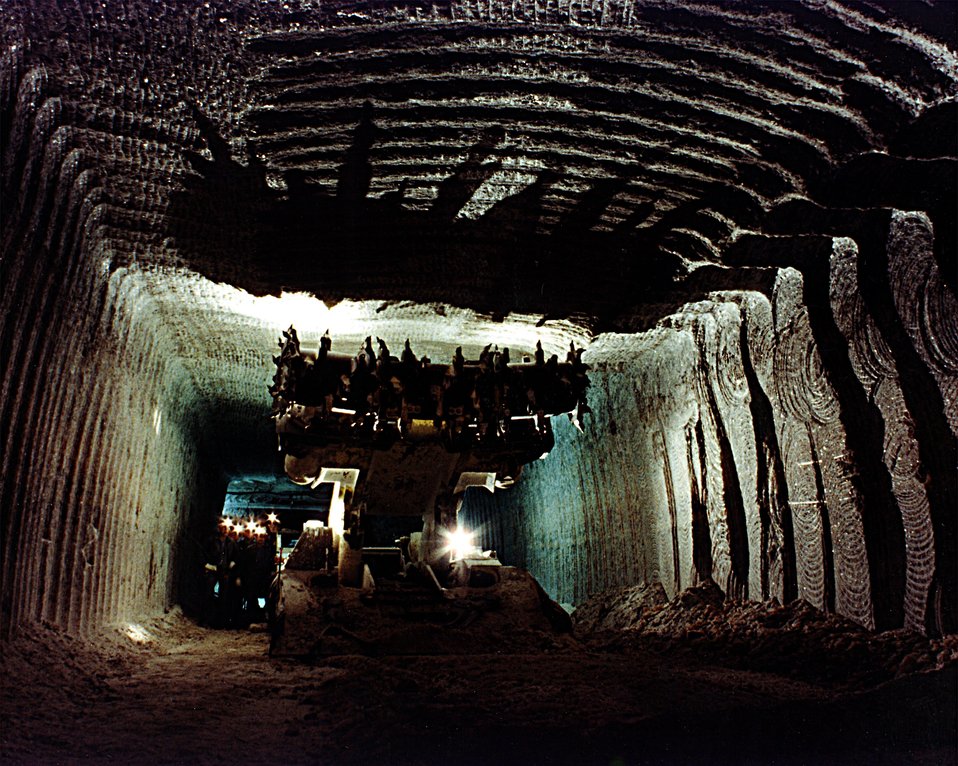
MINING MACHINE.

THE WASTE ISOLATION PILOT PLANT IS A DOE RESEARCH AND DEVELOPMENT FACILITY FOR DEMONSTRATING THE SAFE DISPOSAL OF TRANSURANIC RADIOACTIVE WASTES. TEST SHAFTS HAVE BEEN DRILLED TO A DEPTH OF 2,100 FEET. THE SHAFTS, ONE 6 FEET IN DIAMETER AND THE OTHER 12 FEET IN DIAMETER, PROVIDE AN ENTRY PASSAGE AND VENTILATION TO THE UNDERGROUND SALT ROCK FORMATION THAT IS BEING TESTED TO DETERMINE ITS SUITABILITY FOR RADIOACTIVE WASTE STORAGE.